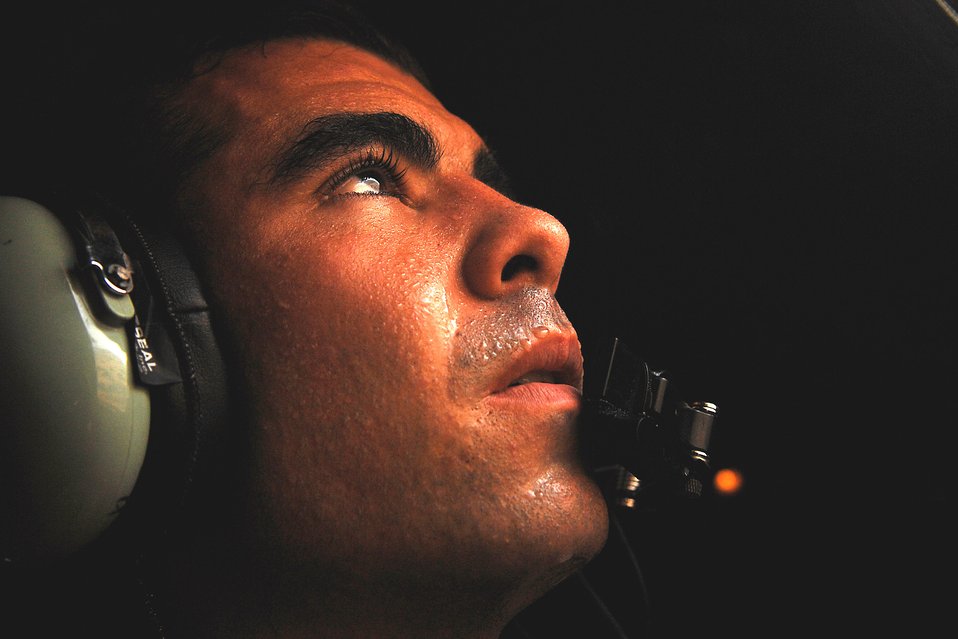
Djibouti Mission

Airman 1st Class Nicholas Greer scans the skies from the jump door window of a HC-130 Hercules June 3 before taking off on a training mission off the coast of Djibouti. Airman Greer is deployed to Combined Joint Task Force-Horn of Africa out of Camp Lemonier, Djibouti. Airman Greer is a an aircraft loadmaster from the 71st Search and Rescue Squadron and is deployed from Moody Air Force Base, Ga.,